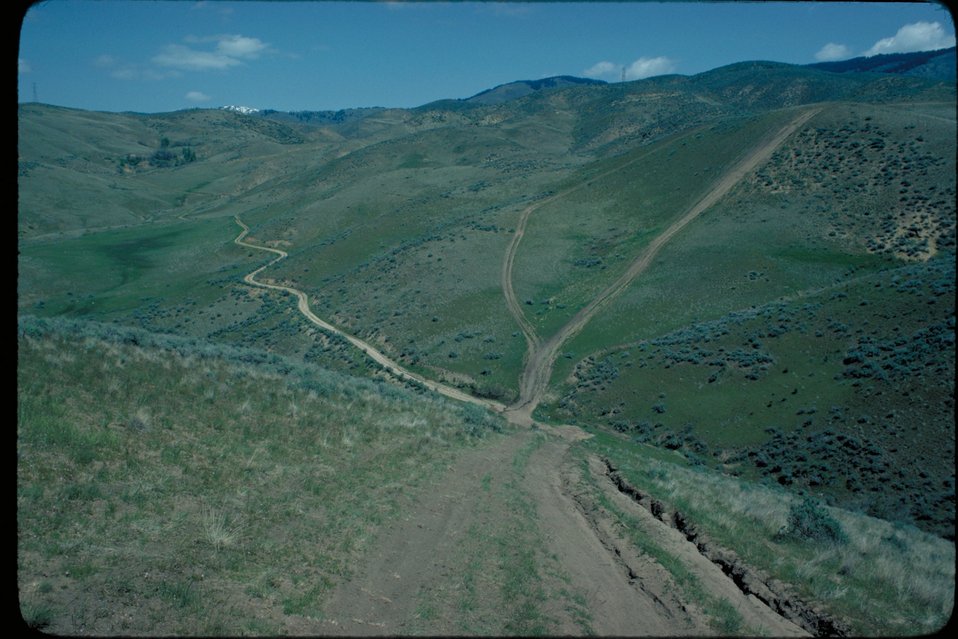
Boise Front roads Four Rivers Field Office LSRD Lower Snake River District